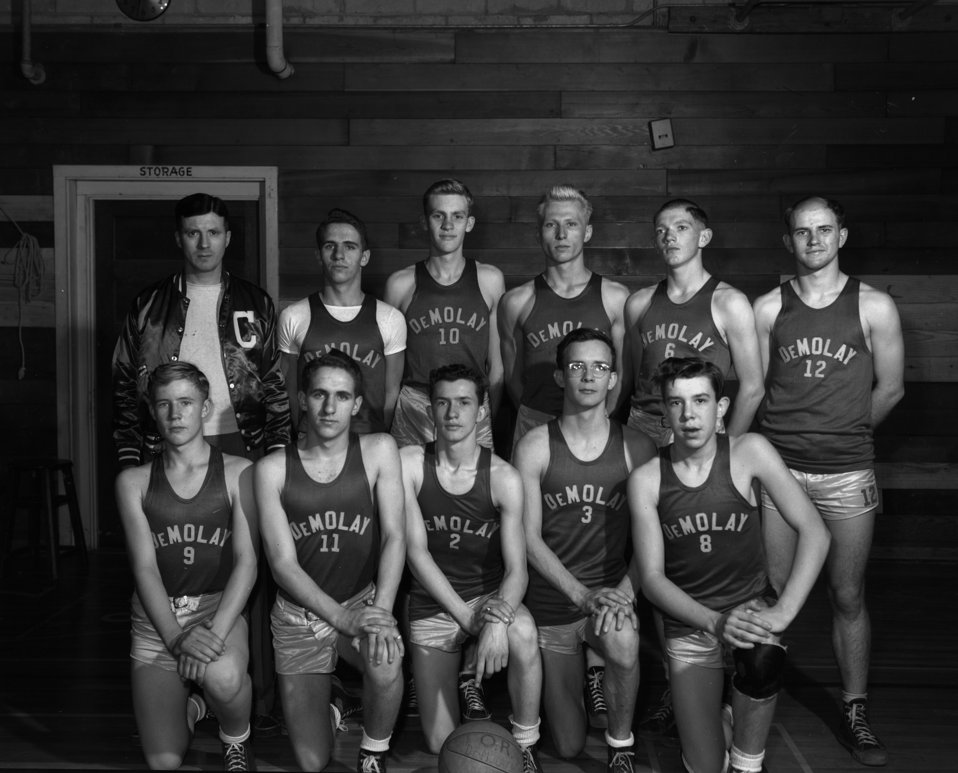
DeMolay Basketball Team

4240-2 DOE photo by Lillian Stokes
Oak Ridge Tennessee 1-10-1948